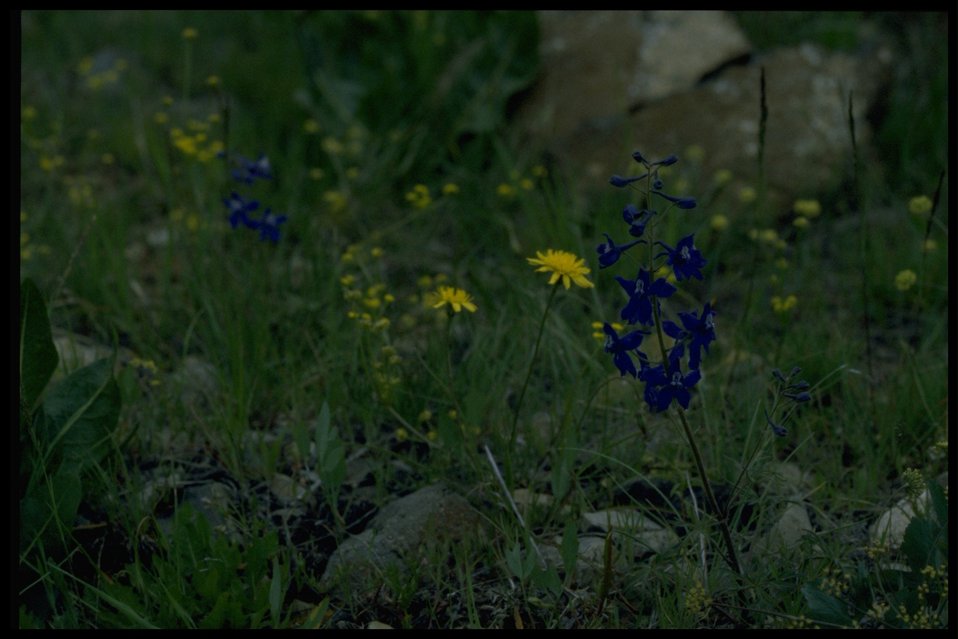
Farshot of prairie dandelion (Microseris troximoides) and upland larkspur (Delphinium nuttallianum).